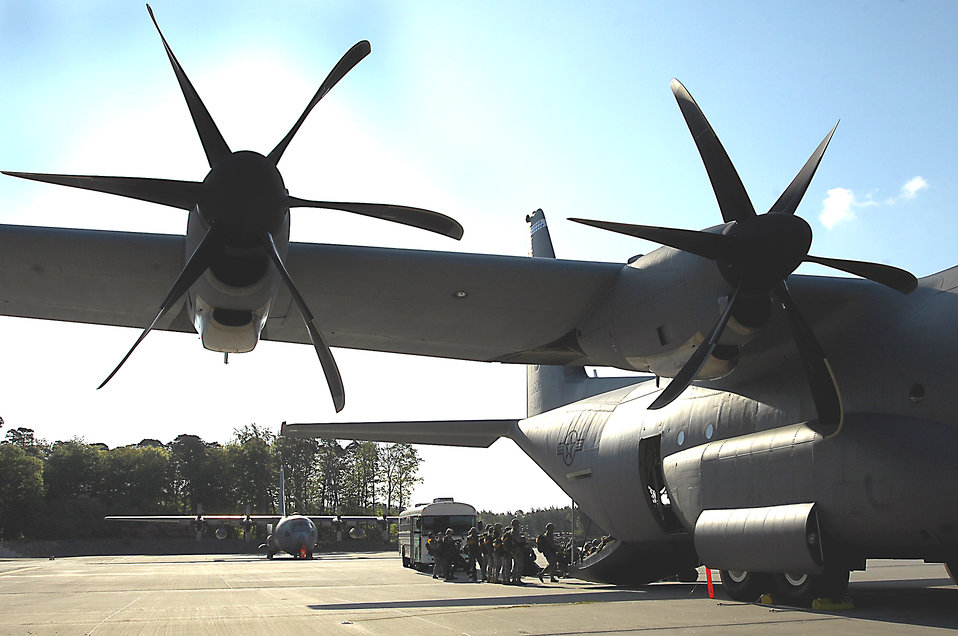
Going for the first Super Herk drop

Paratroopers board a C-130J Super Hercules May 4 at Ramstein Air Base, Germany. The exercise was the first paratrooper air drop with Ramstein's first C-130J.